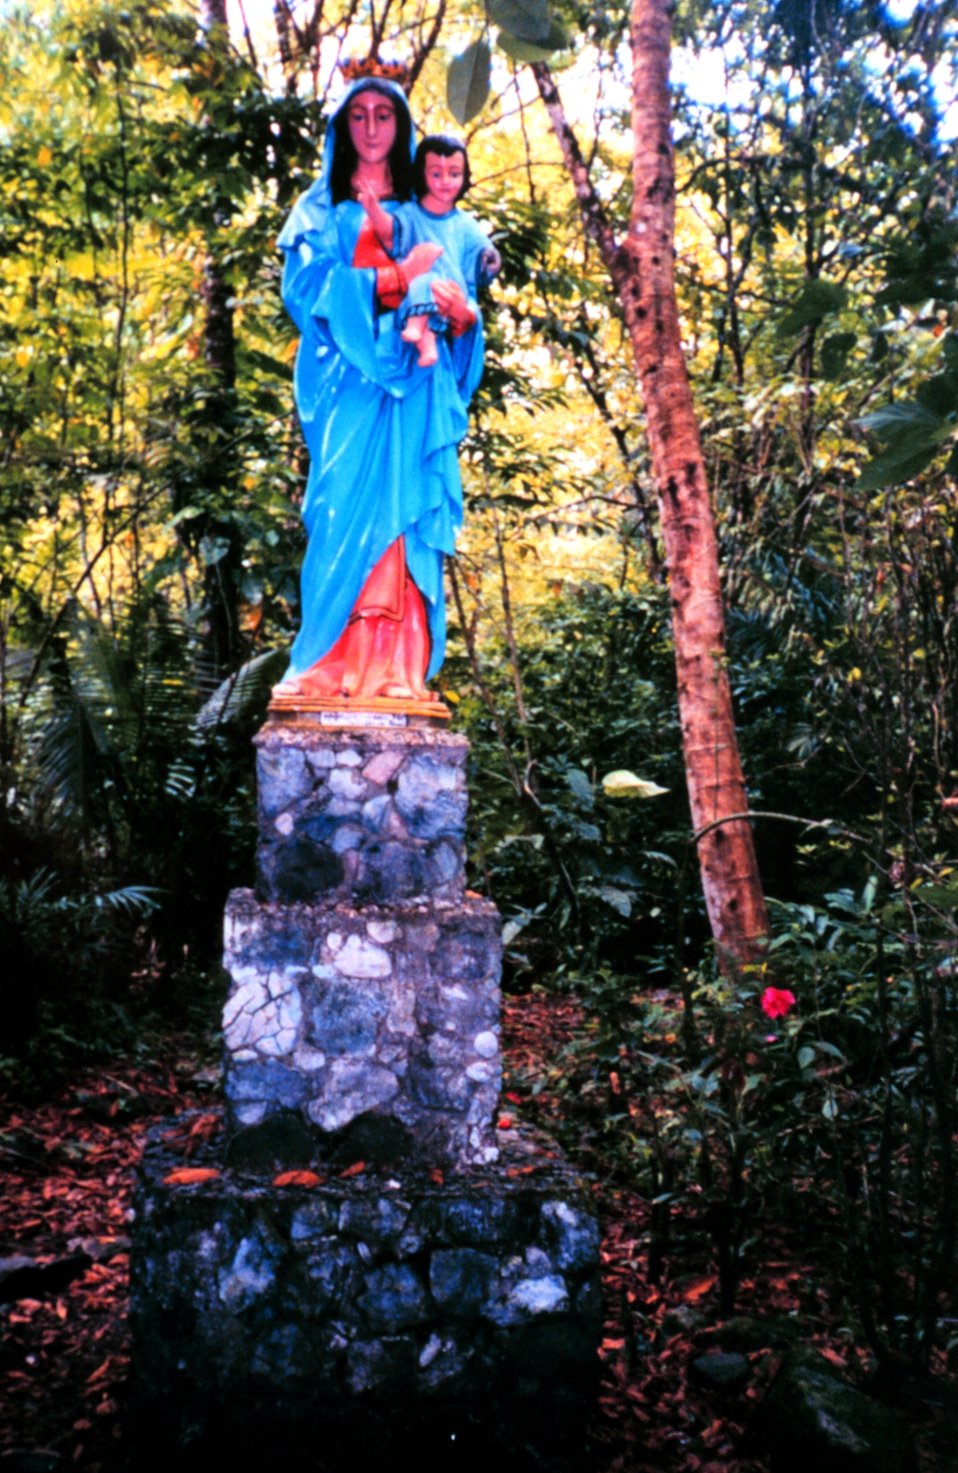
A statue of the Virgin Mary on Isla Gorgona.